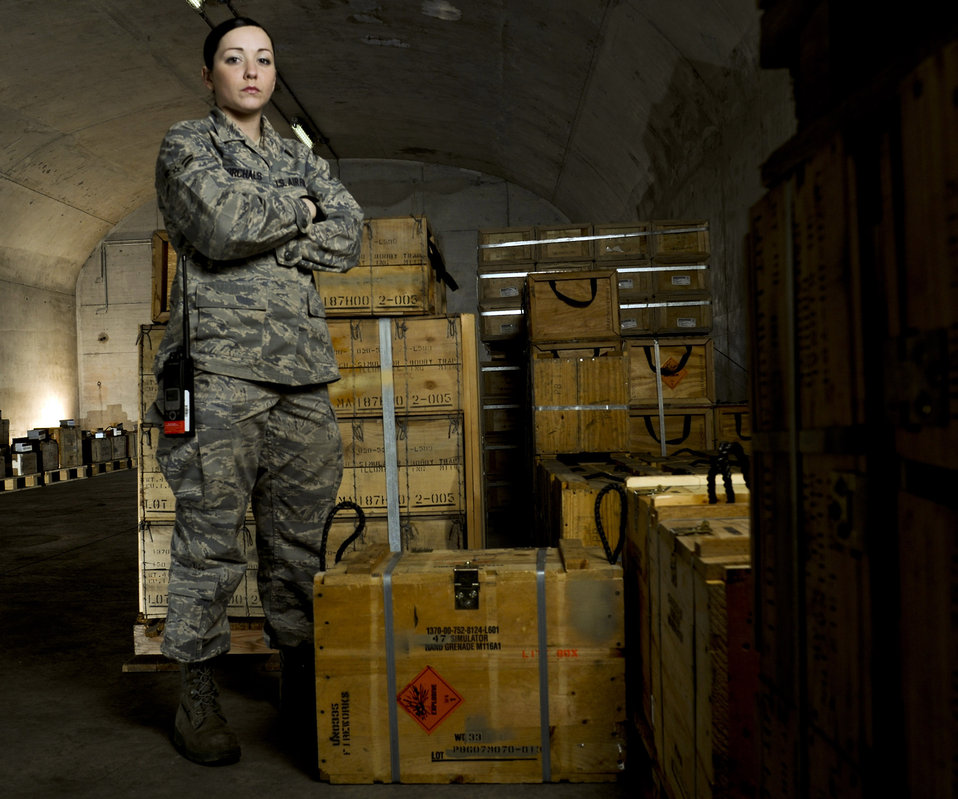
Keeping it secure

Airman 1st Class Victoria Gorchals takes a break in a storage facility March 9 at Ramstein Air Base, Germany. Airman Gorchals, a 435th Munitions Squadron storage crew member, ensures the safe movement and proper storage for munitions.